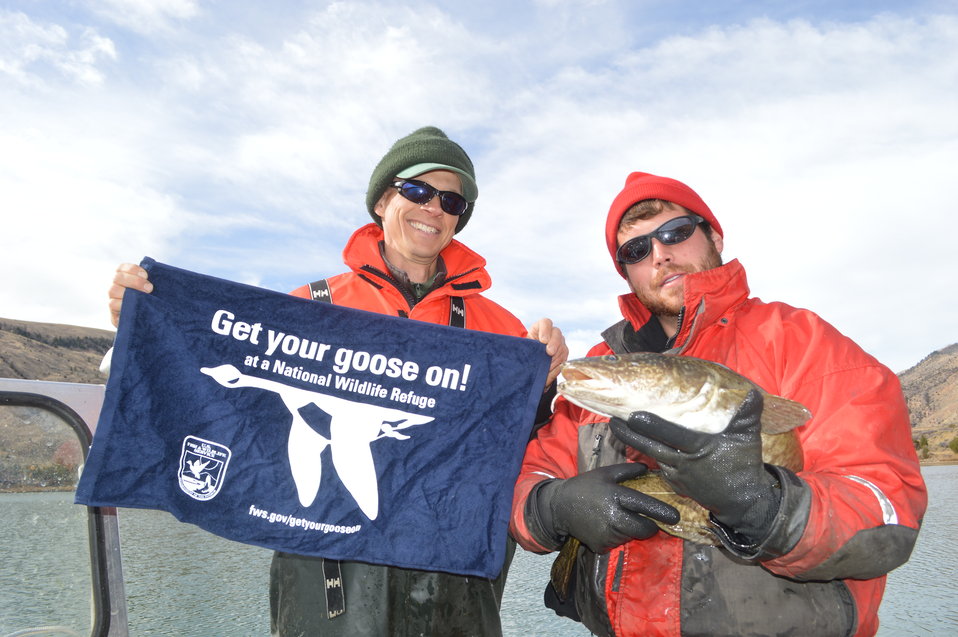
Get your Goose on for Burbot!